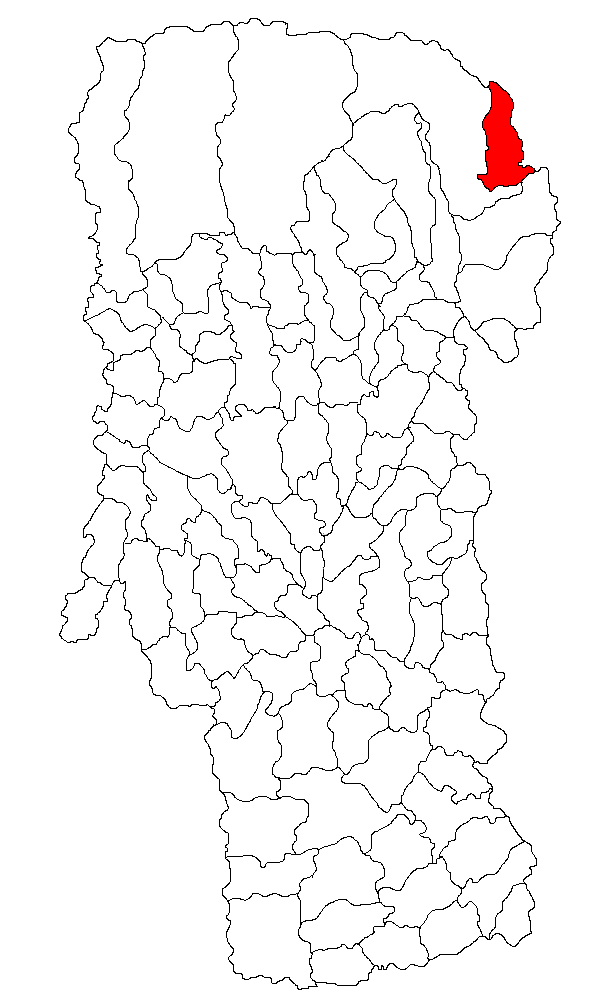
ro:Categorie:Hărţi ale judeţului Argeş